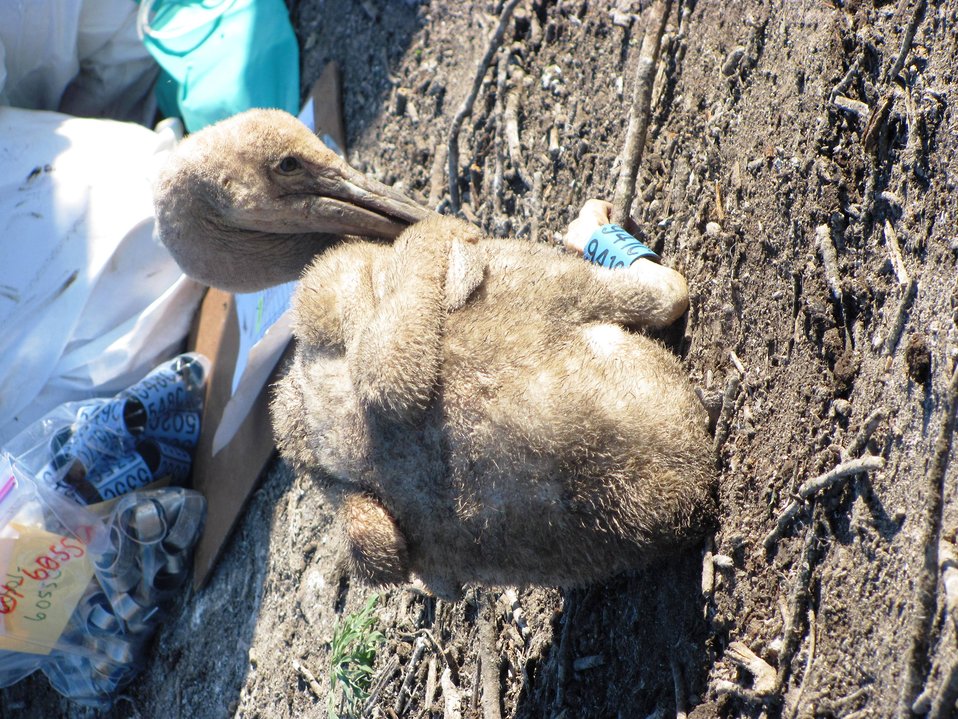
Young Pelican

This juvenile pelican is resting by a banding station. It has a colored blue band on its leg.